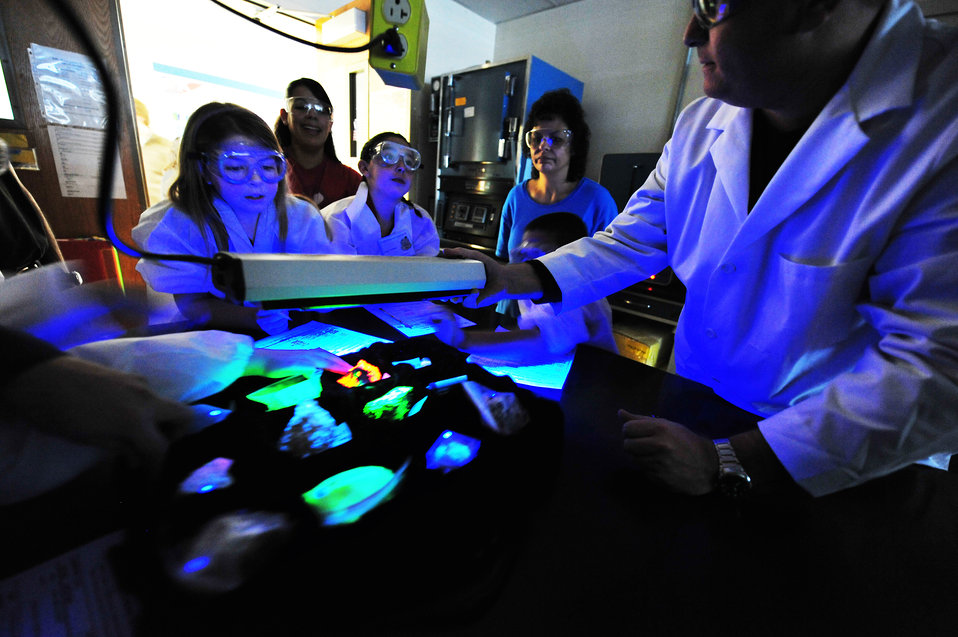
Shown is an outreach designed to produce students who are Hooked on Science at Sandia National Laboratory.

During the week of January 10, the Advanced Materials Laboratory of Sandia National Laboratories invited about 200 fourth-grade students to attend one of eight sessions of purposeful and fun hands-on science experience.